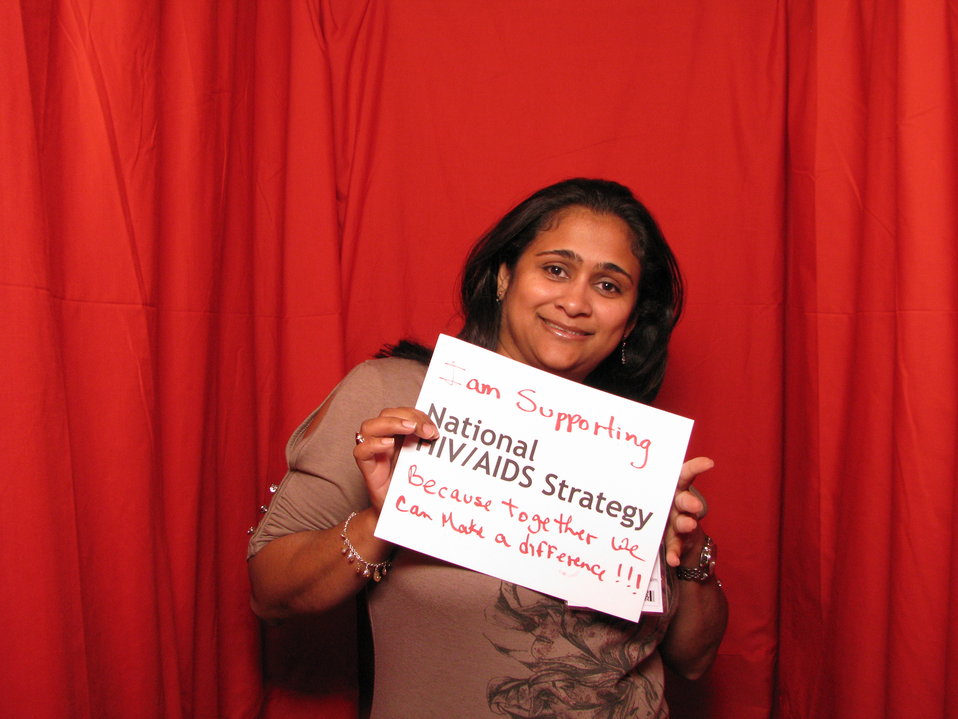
I am Supporting the National HIV/AIDS Strategy because Together We Can Make a Difference!!!

From the AIDS.gov photo booth at the U.S. Conference on AIDS, September 2010 (Orlando, FL).